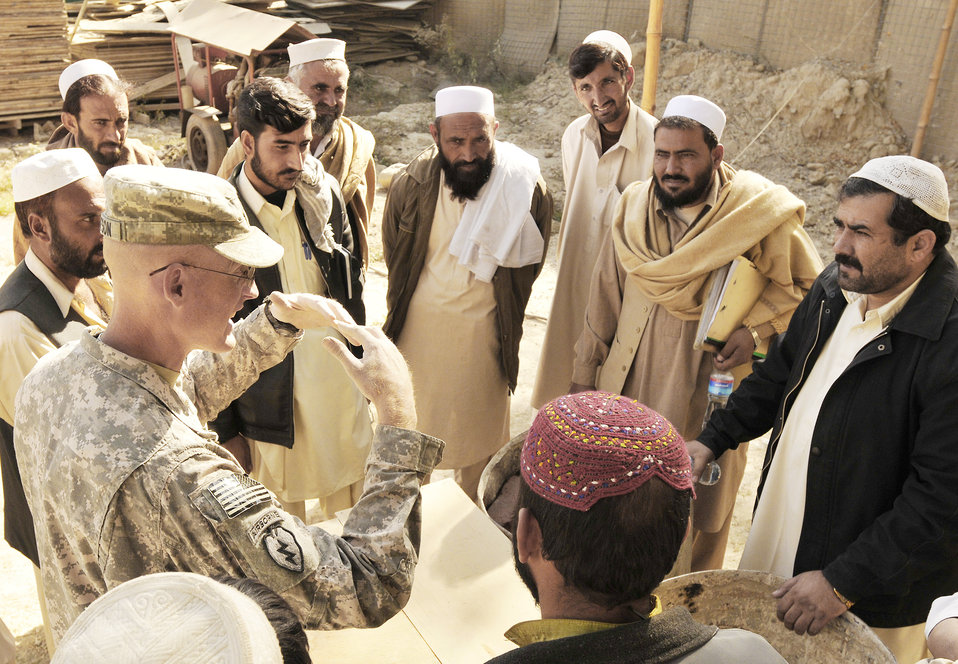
American engineers conduct quality assurance training in Afghanistan

KHOST PROVINCE, Afghanistan - U.S. Navy Lt. Stephen J. Gustafson, Khost Provincial Reconstruction Team engineer, teaches proper masonry supply storage to local engineers, construction contractors, and foremen during a monthly contractor training session held at the Civil Military Operations Center, Khost, Afghanistan, Nov. 14. Engineers from the Khost PRT provided construction quality assurance training to locals in order to facilitate high quality construction practices in the region.